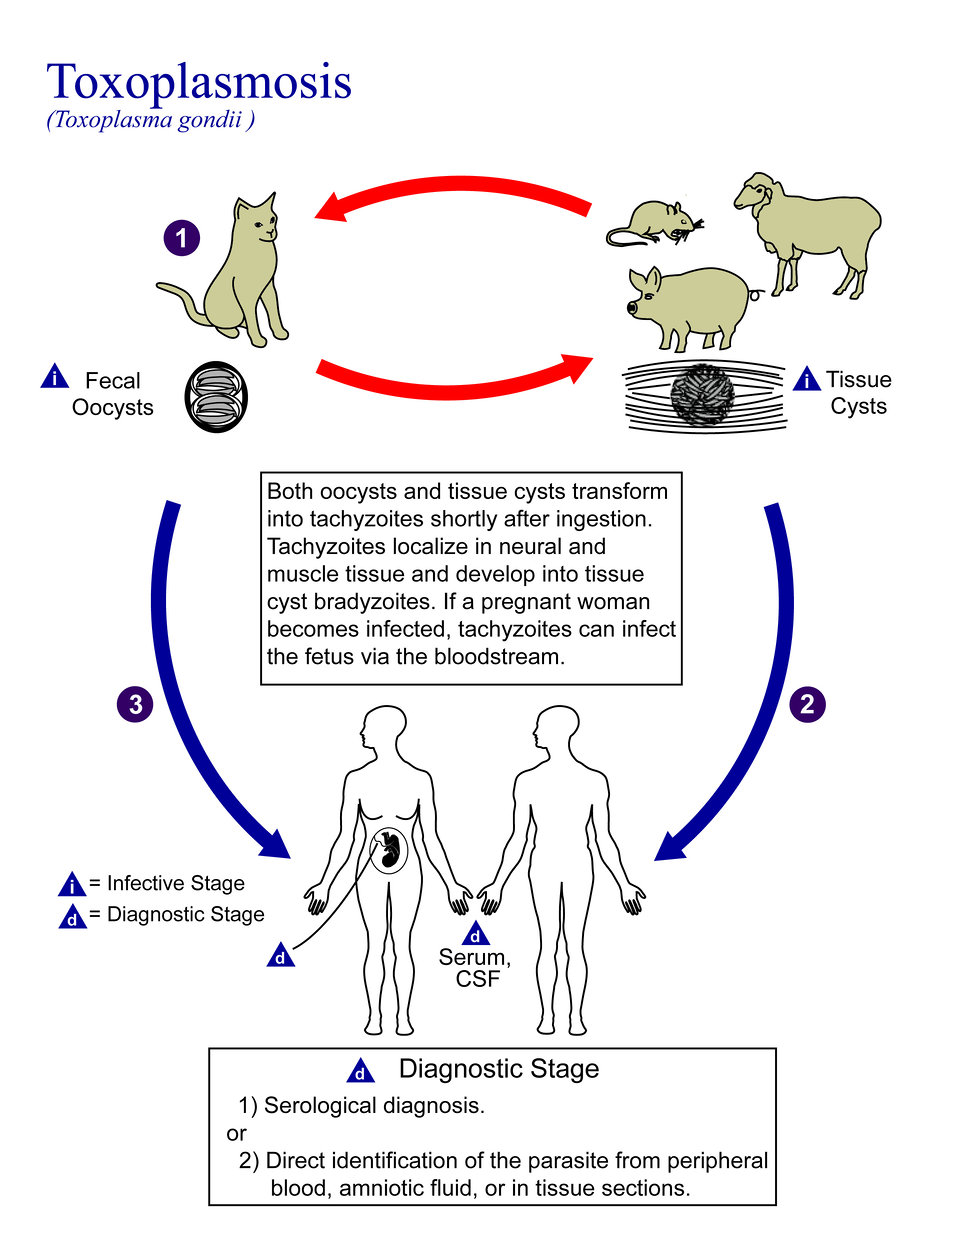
This is an illustration of the life cycle of Toxoplasma gondii, the causal agent of Toxoplasmosis.